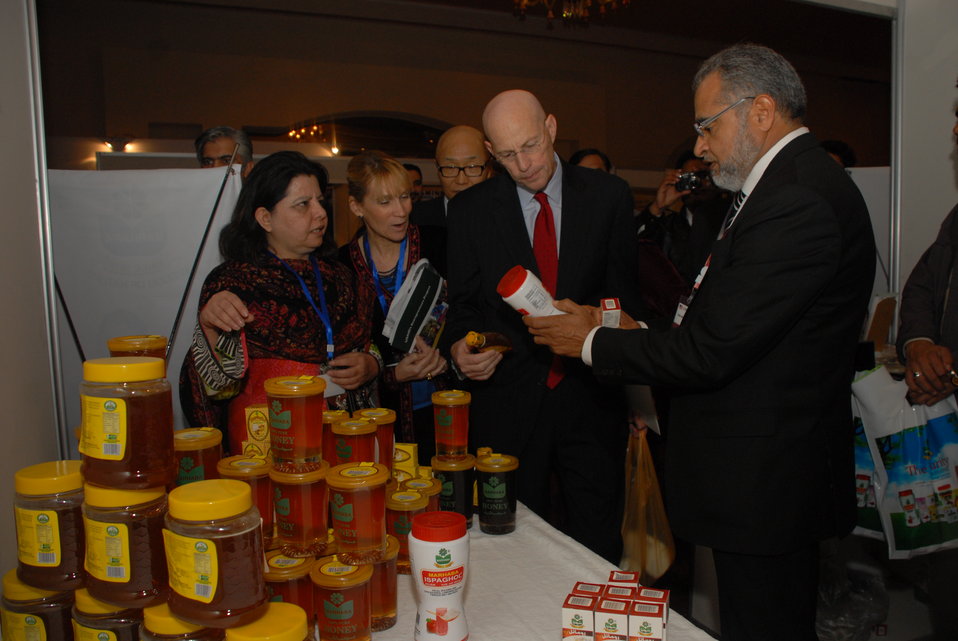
The United States Helps Revitalize Medicinal Plants and Honey Industry in Khyber Pakhtunkhwa 04

Islamabad, February 3, 2014 – The United States, through the U.S. Agency for International Development’s (USAID) Entrepreneurs Project, has trained 24,000 small business owners in the field of medicinal plants and honey. The Medicinal and Aromatic Plants and Honey Industry conference on February 3 featured discussions aimed at developing the medicinal plant and honey sector in Pakistan. Plant collectors and bee-keepers discussed business opportunities with buyers and service providers.